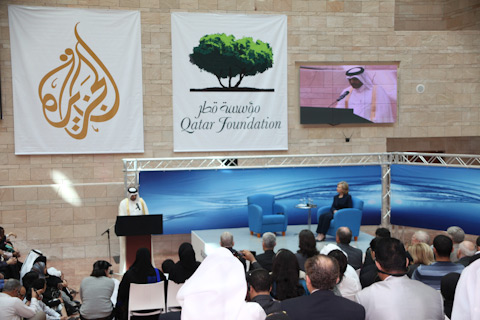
Secretary Clinton Travels to Qatar and Saudi Arabia

U.S. Secretary of State Hillary Rodham Clinton at Carnegie Mellon Qatar at the start of the Townterview, listening to an introduction by Dr. Abdulla bin Ali Al-Thani, Vice President of Education at the Qatar Foundation in Doha, Qatar February 15, 2010.